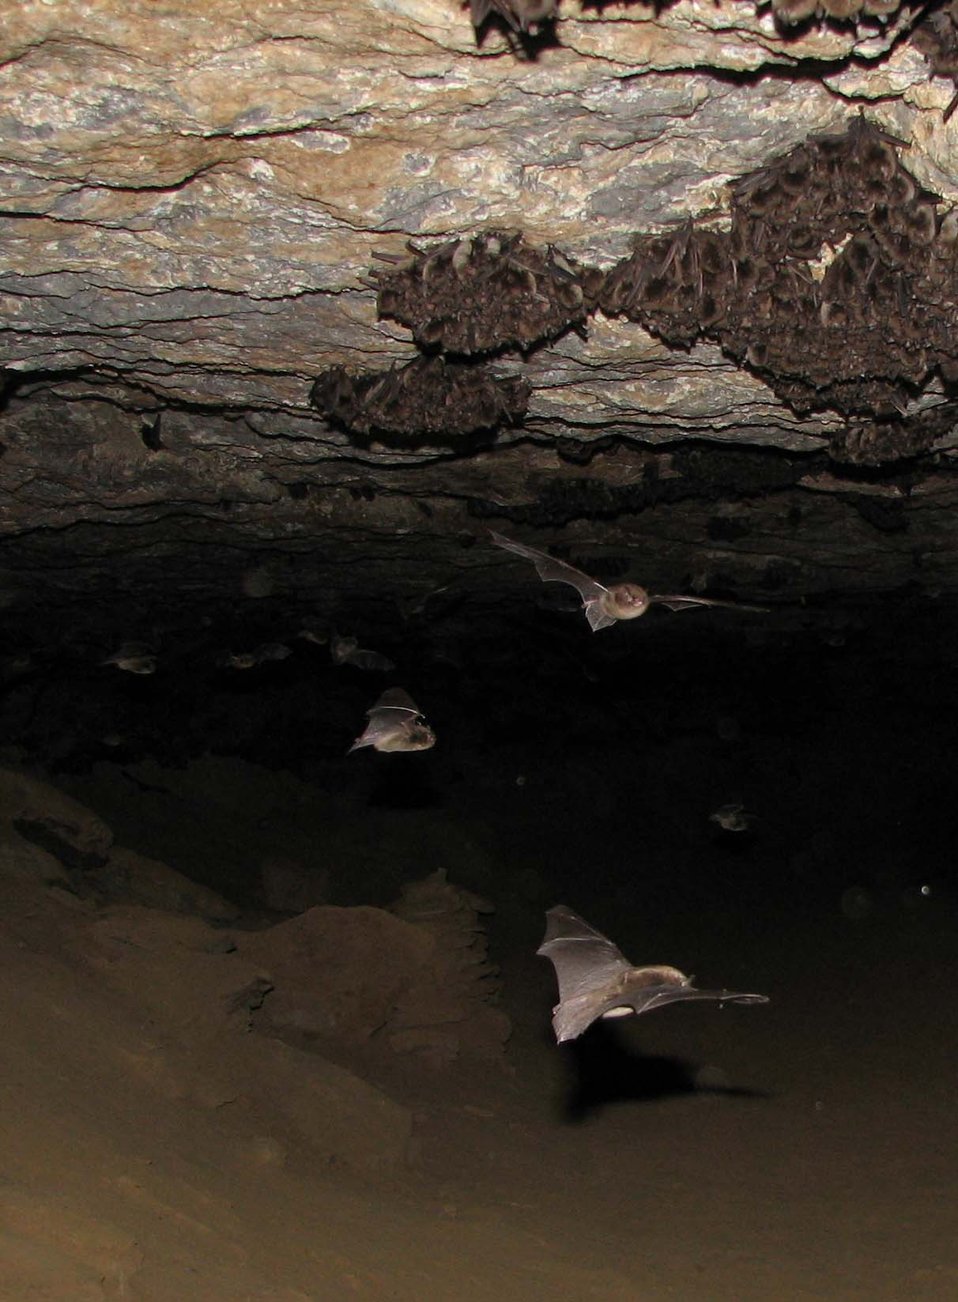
Indiana Bats (Myotis sodalis)

Credit: USFWS; Andrew King